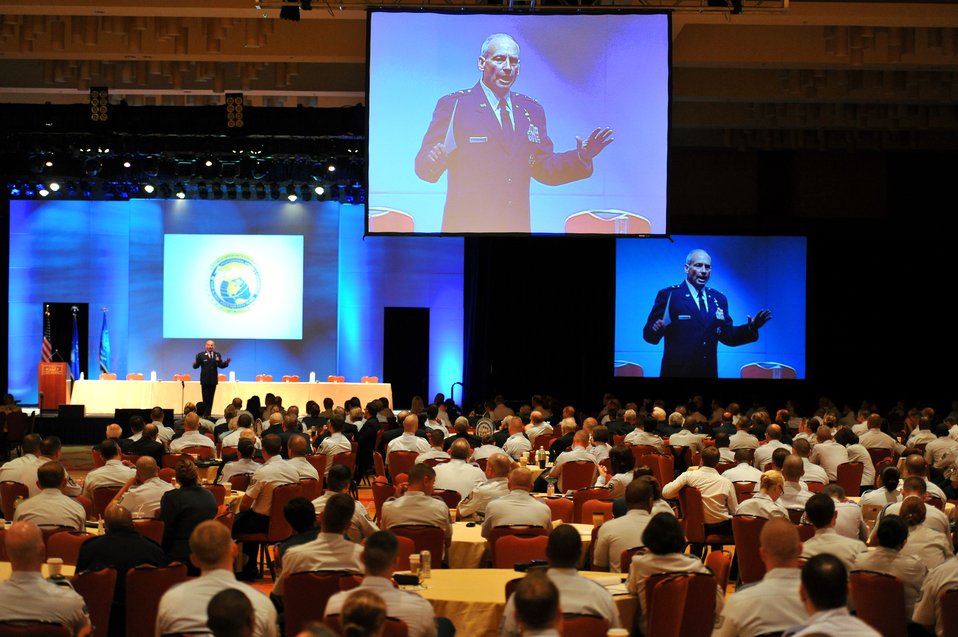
Air Force Global Strike Command

Lt. Gen. Jim Kowalski, the commander of Air Force Global Strike Command, speaks to Airmen about Global Strike Command and efforts to strengthen the nuclear enterprise July 26, 2011, at the Air Force Sergeants Association's Annual Professional Airmen's Conference in San Antonio. Some 600 Airmen participated in the event.